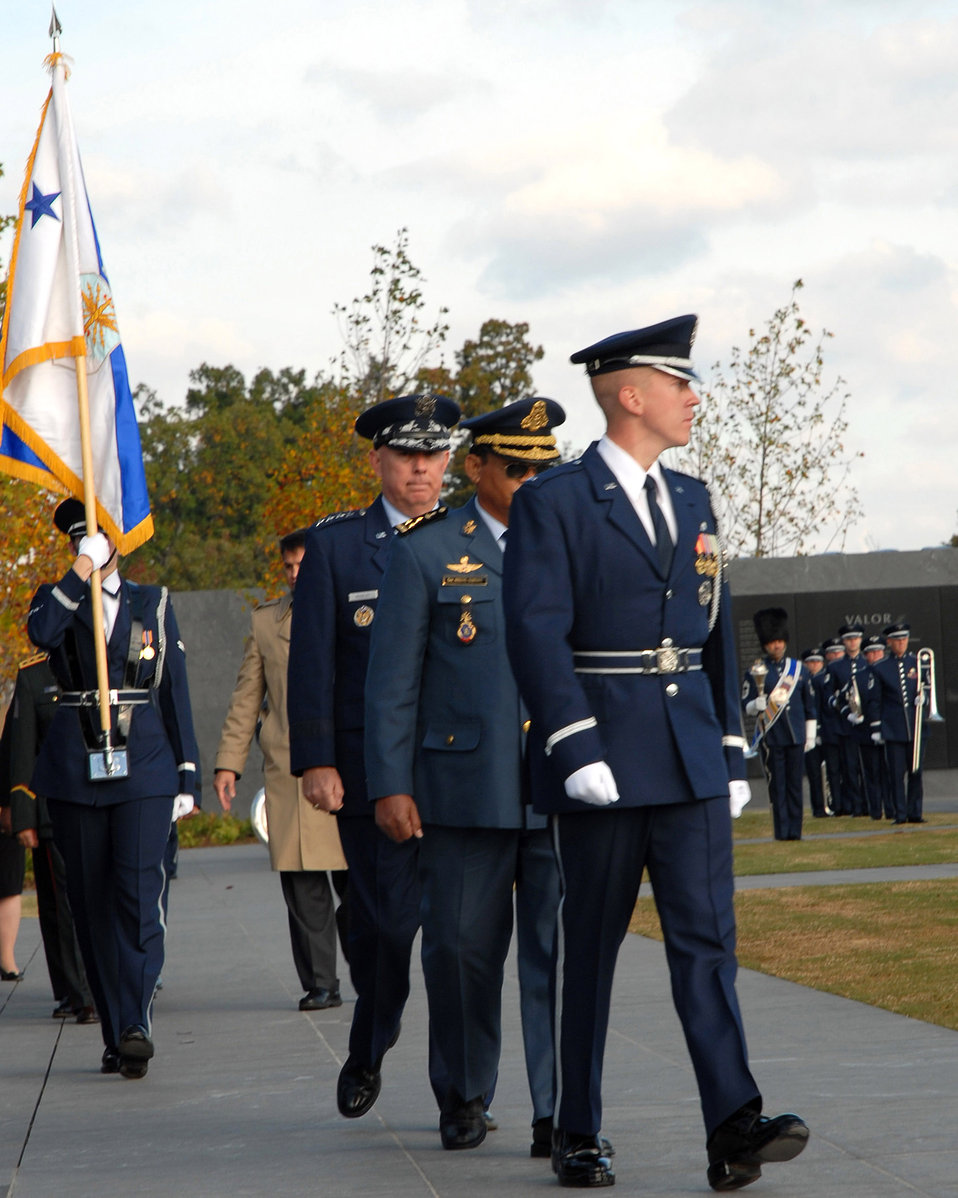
Paying Respect

1st Lt. John Shirley from the Air Force Honor Guard leads Chief of Staff of the Air Force Gen. T. Michael Moseley and Lt. Gen. Soeung Samnang, Cambodian Royal Air Force commander, to the wreath during a foreign dignitary arrival and wreath laying ceremony Tuesday, Oct. 24, 2006, at the Air Force Memorial.